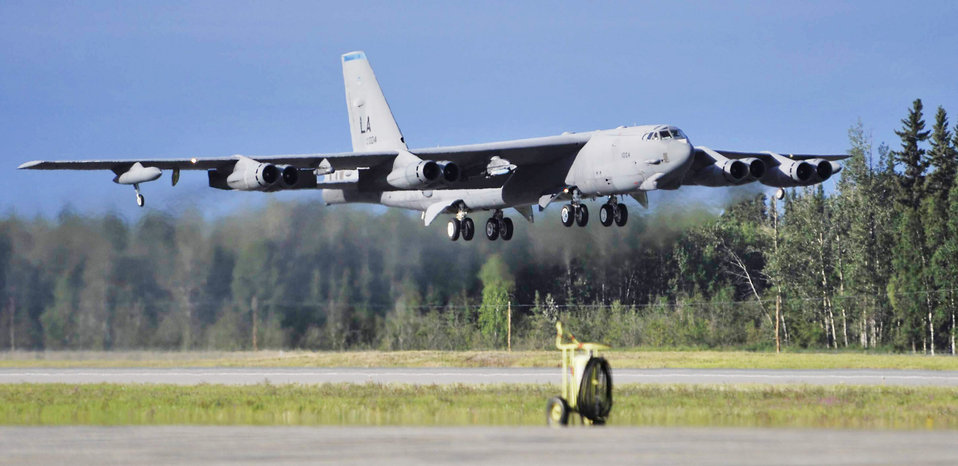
Bomber crews improve mission skills at Northern Edge 2009

A B-52H Stratofortress takes off from Eielson Air Force Base, Alaska, June 23 during Northern Edge 2009. The exercise is one in a series of U.S. Pacific Command exercises that prepare joint forces to respond to crises in the region. The B-52 is assigned to Barksdale AFB, La.